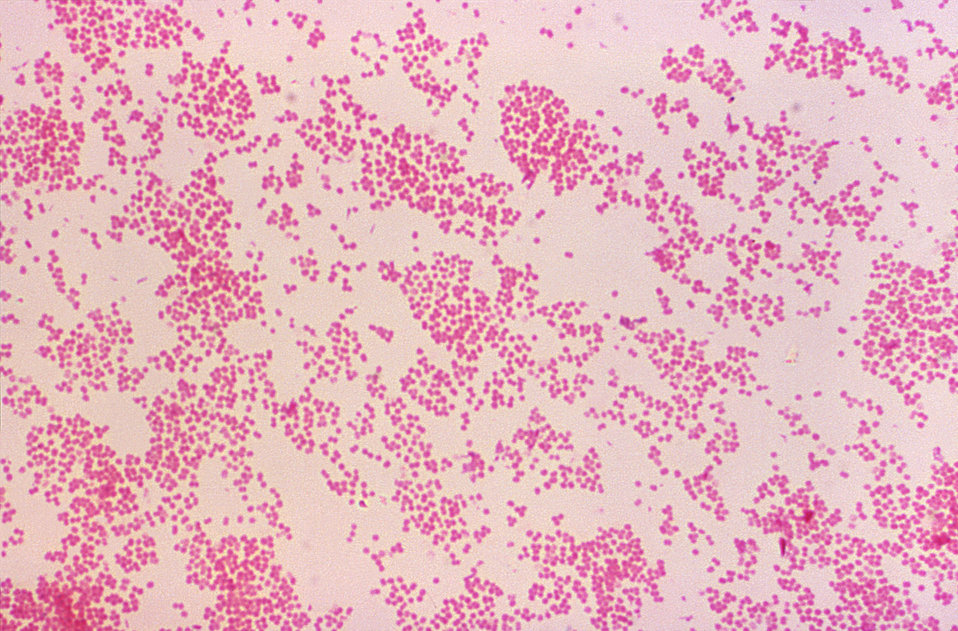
This Gram-stained photomicrograph revealed the presence of numerous Gram-negative, diplococcal Neisseria flavescens bacteria.